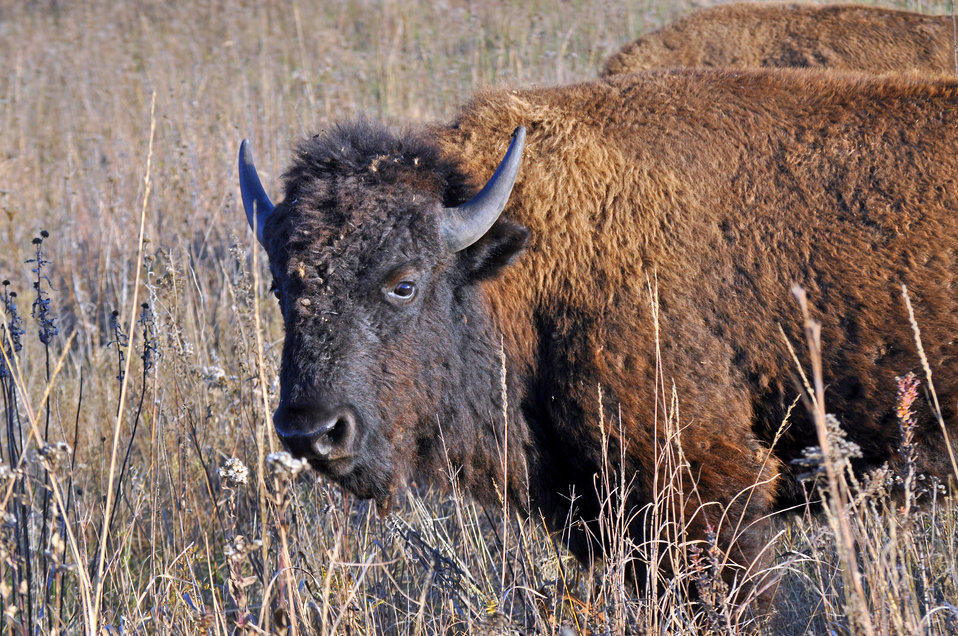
Bison at Dunn Ranch, an a prairie restored by The Nature Conservancy in northwest Missouri.